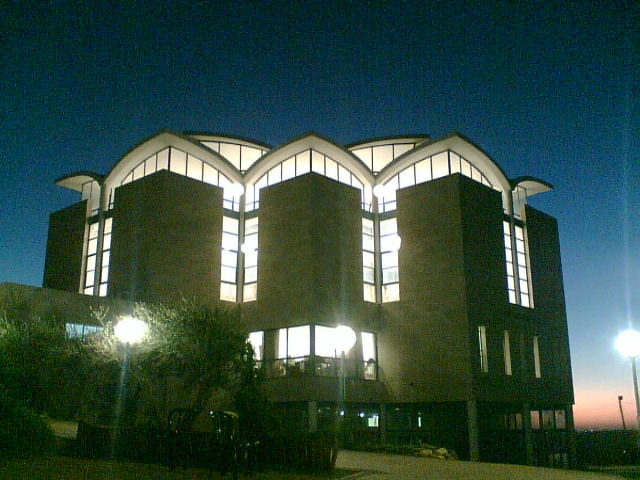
Yeshiva Otniel at night